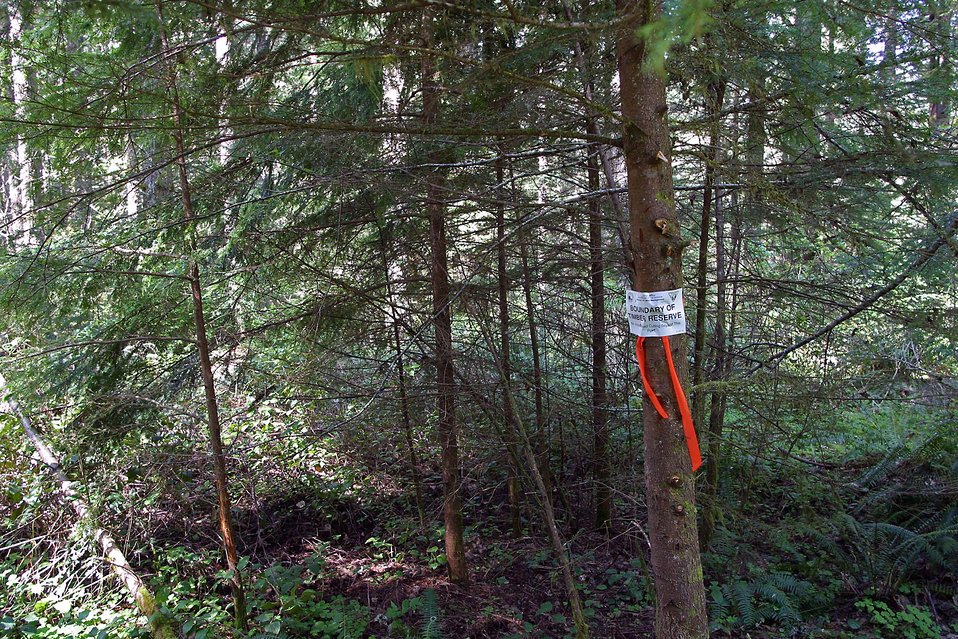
Boundary Marker in the Santiam watershed.